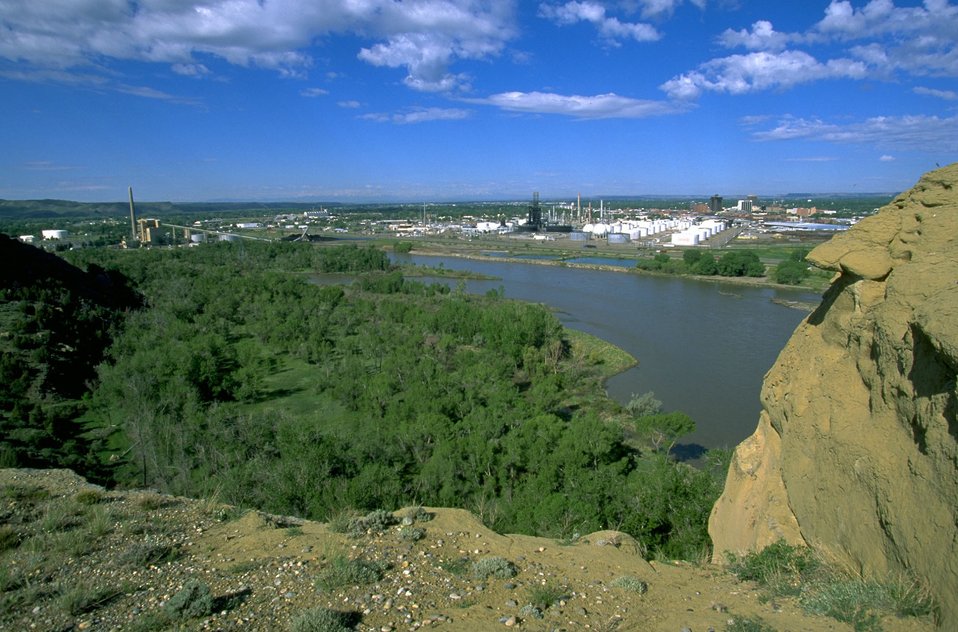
View of the Yellowstone River and oil refinery from the rimrocks in the Four Dances Natural Area